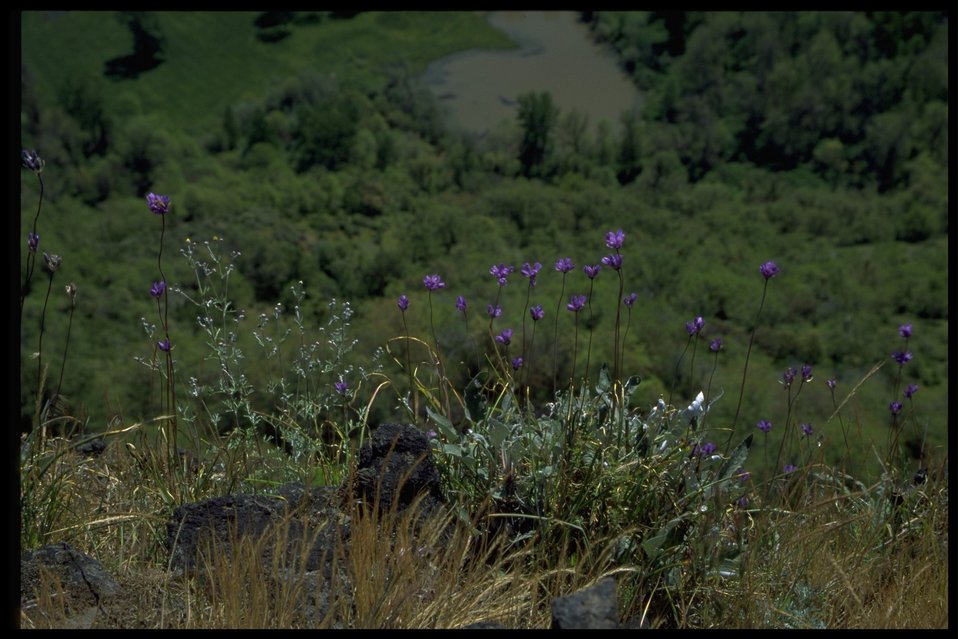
Farshot of Dichelostemma capitatum.